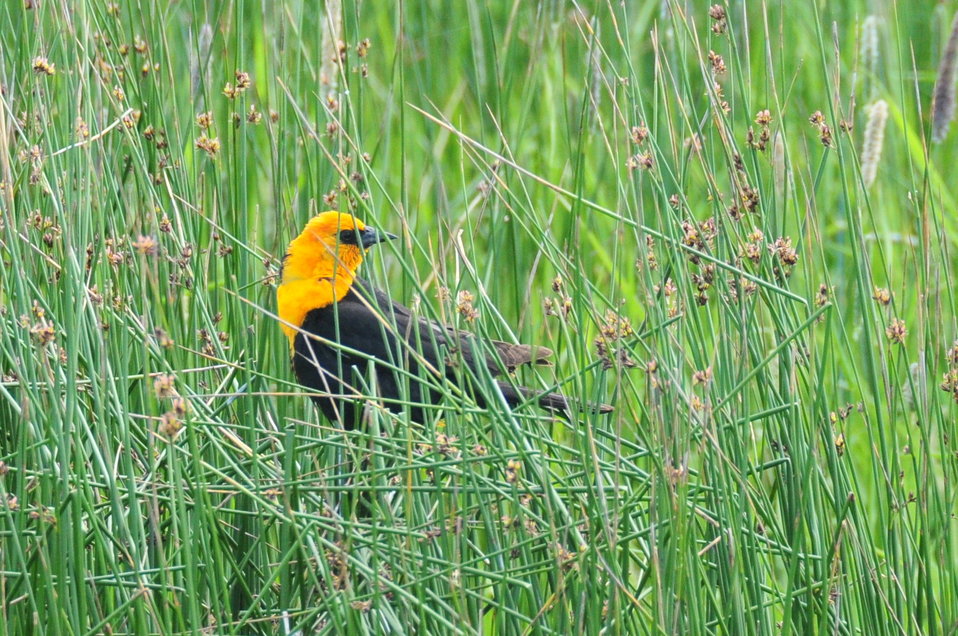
Yellow headed blackbird on Cokeville Meadows NWR.